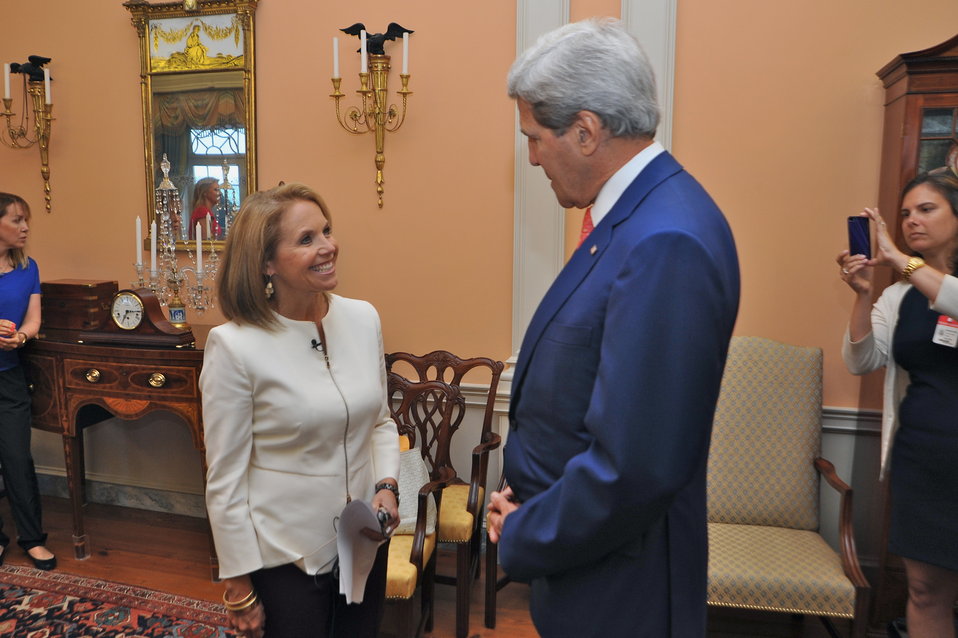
Yahoo! News Reporter Katie Couric Greets Secretary Kerry

Yahoo! News Reporter Katie Couric Interviews U.S. Secretary of State John Kerry at the U.S. Department of State in Washington, D.C. on June 16, 2014.